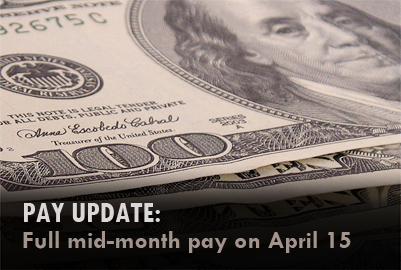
Pay Update